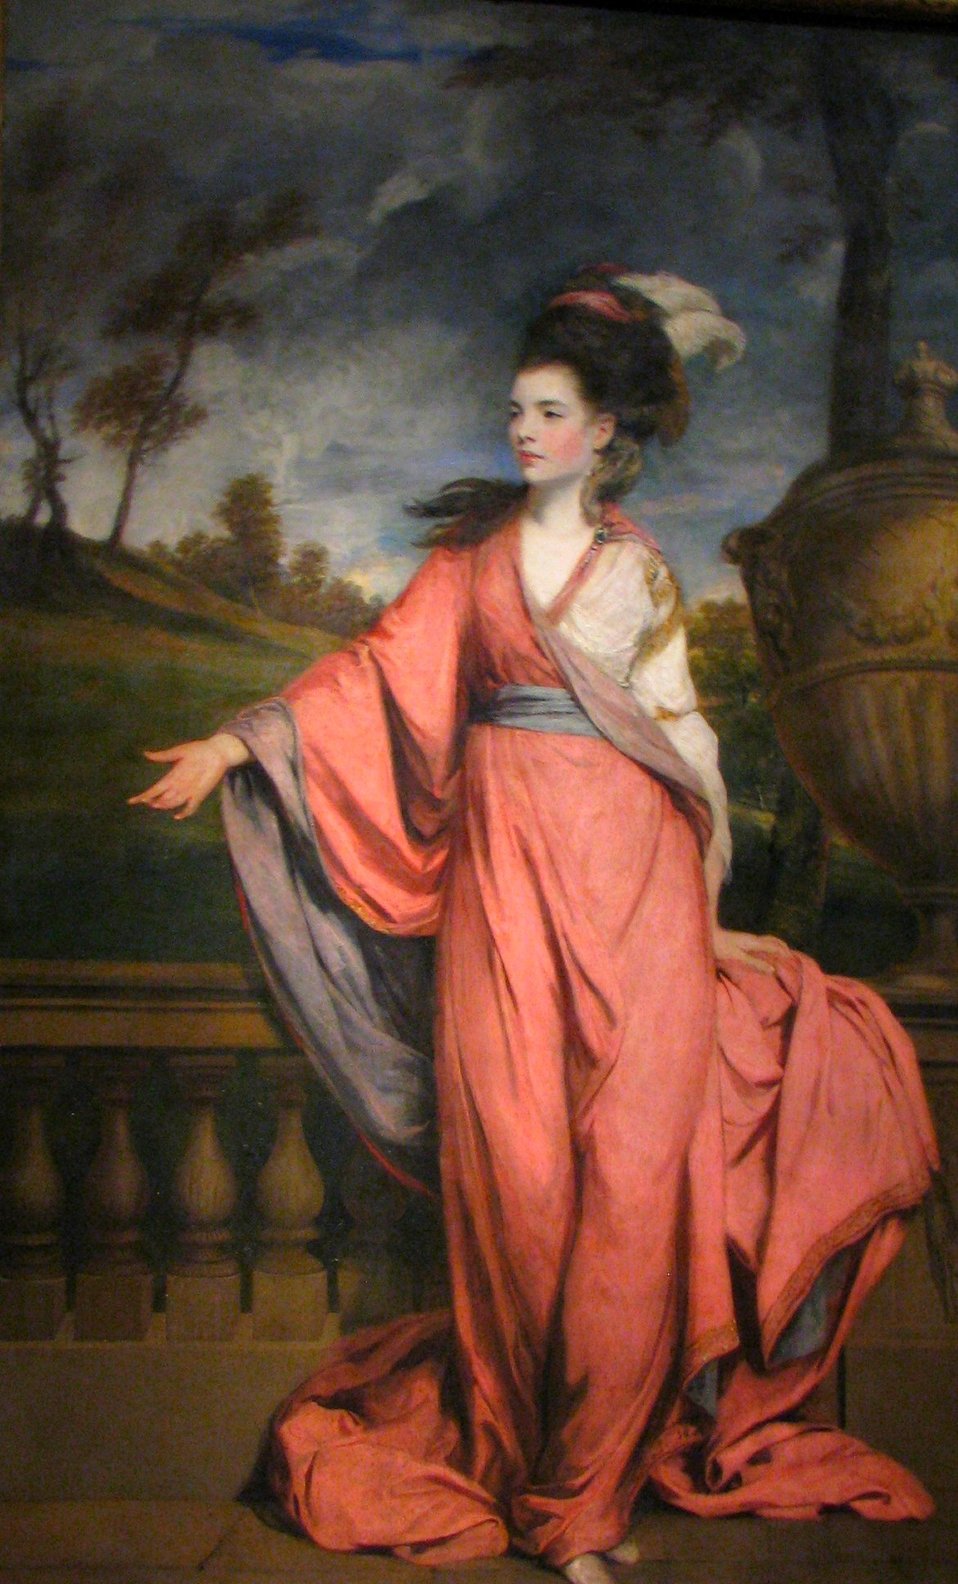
Jane Fleming